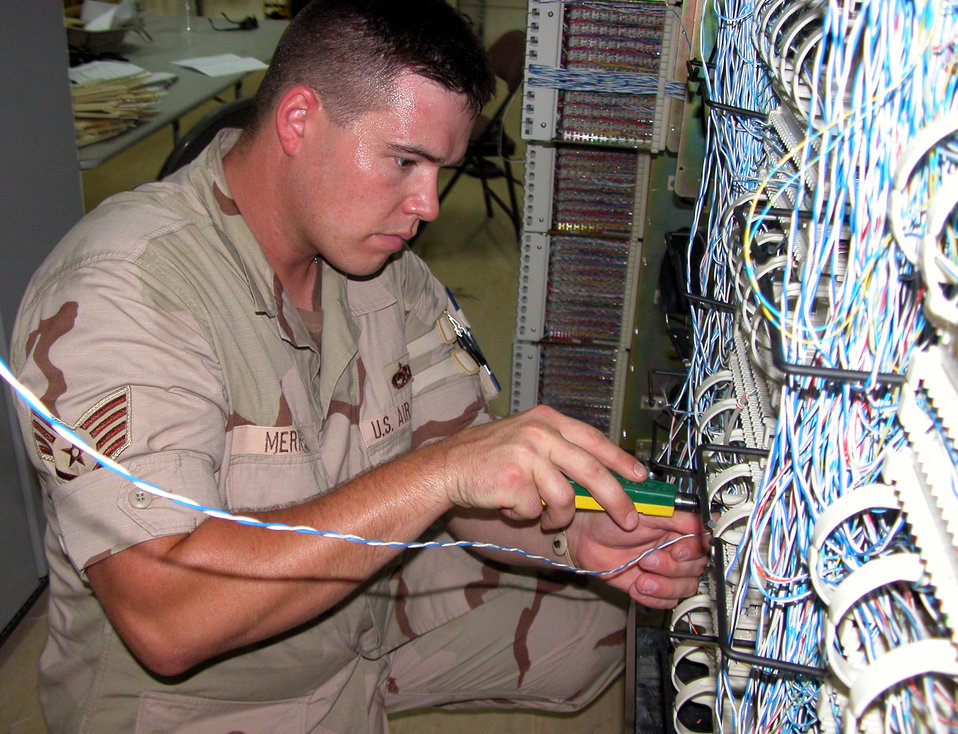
Getting wired

SOUTHWEST ASIA -- Staff Sgt. Raymond Merrow III installs wiring in a new billeting facility at a forward-deployed location. The building is one of more than 40 being wired for telephones, cable television and computer-network access. Sergeant Merrow is assigned to the 379th Expeditionary Communications Squadron and is deployed from Langley Air Force Base, Va.